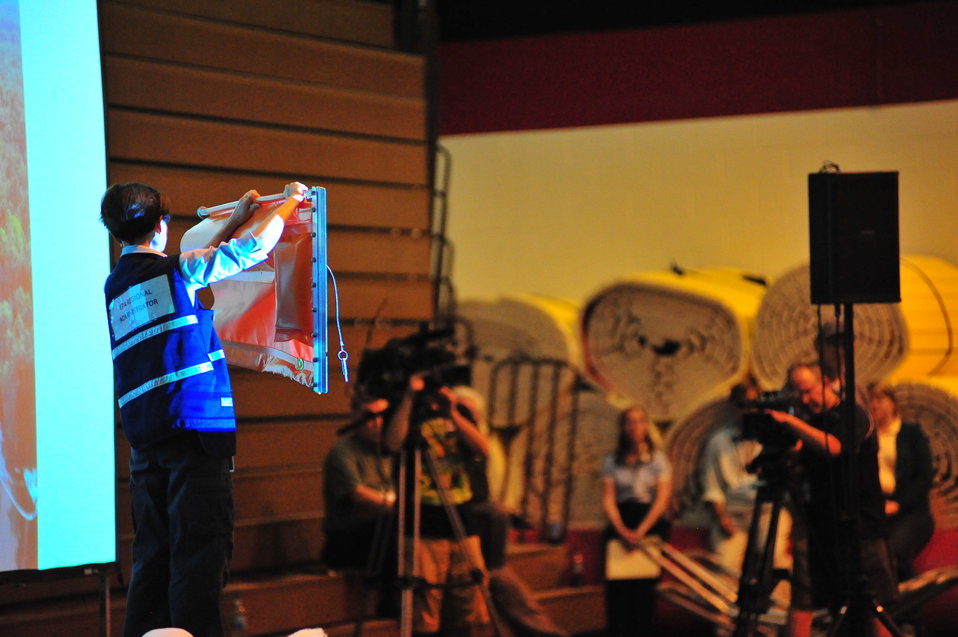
EPA's response to the Enbridge oil spill

August 3, 2010 -- EPA Regional Administrator Susan Hedman shows the audience a section of containment boom at a public meeting in Marshall, Mich. More than 700 people filled the high school gymnasium to learn more about the government response to the spill.